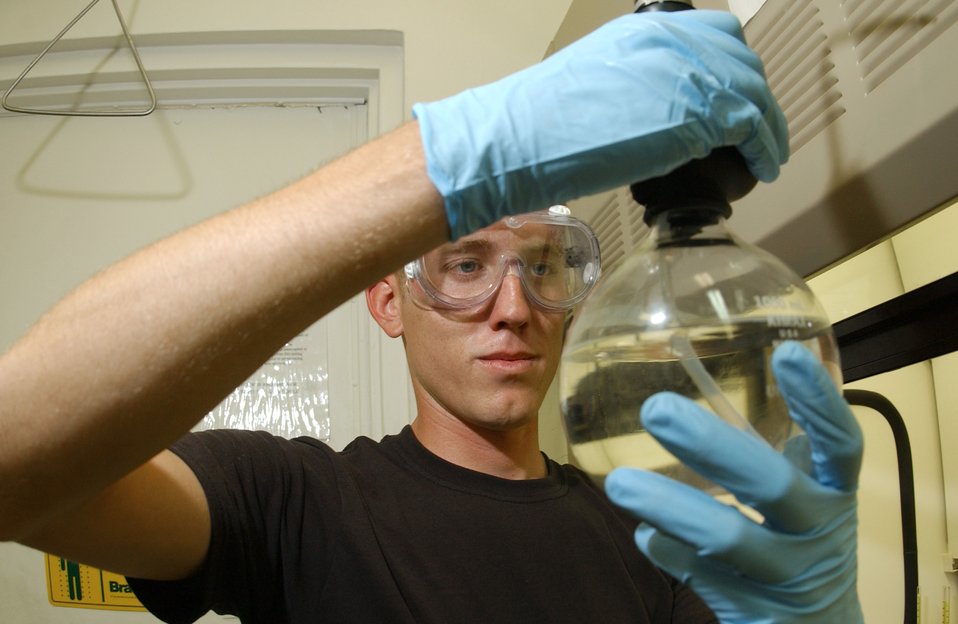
Fuels laboratory

Senior Airman Jeff Simmons measures ether in a bottle to check for impurities in JP-8 jet fuel Monday, March 20, 2006, at MacDill Air Force Base, Fla. Airman Simmons runs sample tests to ensure fuels are in compliance with Air Force standards and have no additives that could damage an aircraft. Airman Simmons is a fuels lab technician with the 6th Logistics Readiness Squadron.